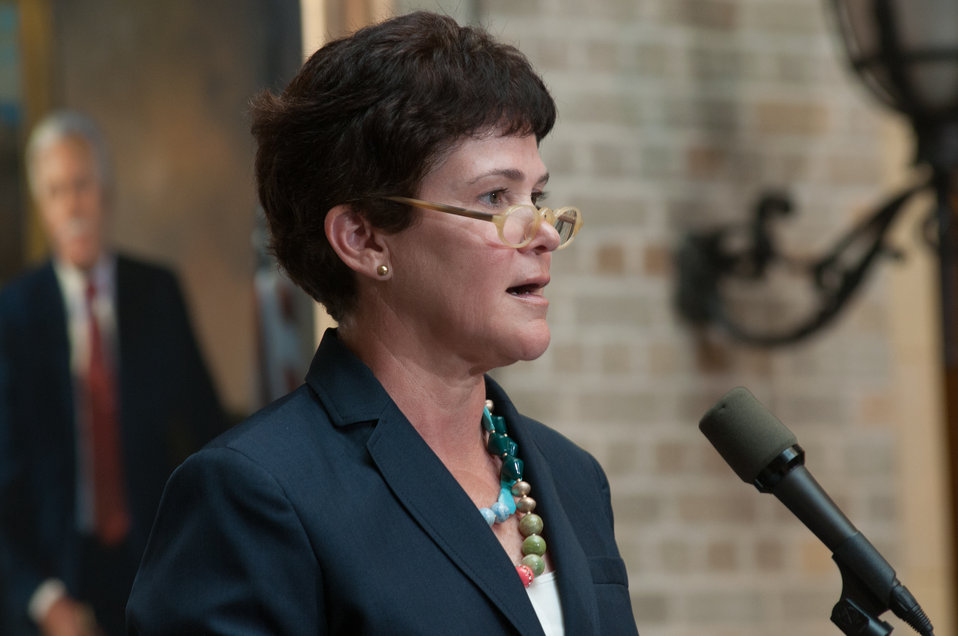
U.S. Department of Agriculture (USDA) Deputy Secretary Krysta Harden talks about the partnership agreement and five new grants for private, state and federal organizations that will work together to stimulate the development of additional wood energy projects in their states, during the Memorandum of Understanding (MOU) announcement and signing at the USDA Headquarters, in Washington, D.C., on Wednesday, September 11, 2013. Collectively, $2.9 million will be spent o this effort -- $1.1 million on federal funds and $1.8 million in non-federal funds.
The partnership agreement focuses on promoting wood energy nationwide as a means to address fire risks, bolster rural economic development, improve air quality, and help meet the Obama Administration’s renewable energy and energy efficiency goals. These organizations support the use of wood energy across the scale of users – from residential users, to commercial and intuitional facilities, to industrial production of heat and or electricity to drive businesses and feed the electrical grid.
Signing the MOU are Biomass Thermal Energy Council, Executive Director Joseph Seymour; Alliance for Green Heat, President John Ackerly, USDA Deputy Agriculture Secretary Krysta Harden; Pellet Fuels Institute Executive, Director Jennifer Hedrick; Biomass Power Association, President and CEO Bob Cleaves. For more information on the cooperative agreement program, visit na.fs.fed.us.werc/wood-energy/ USDA Photo by Lance Cheung.